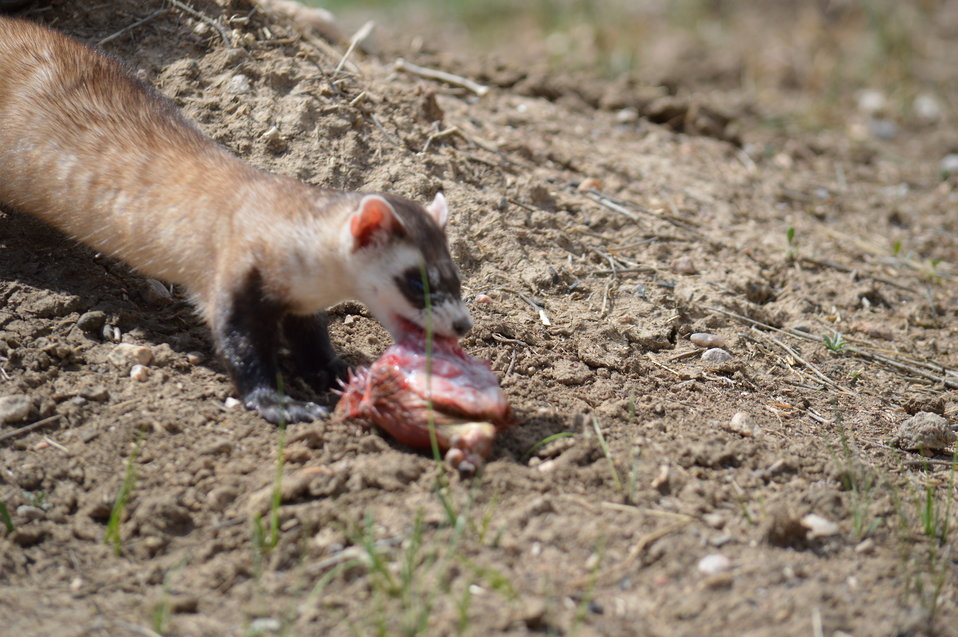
Interns visit the NBFFCC

In the summer of 2012, USFWS Region 6 interns visited the National Black-footed Ferret Conservation Center (NBFFCC) in Colorado to learn how the program reintroduces the endangered Black-footed ferret back into its native habitat.